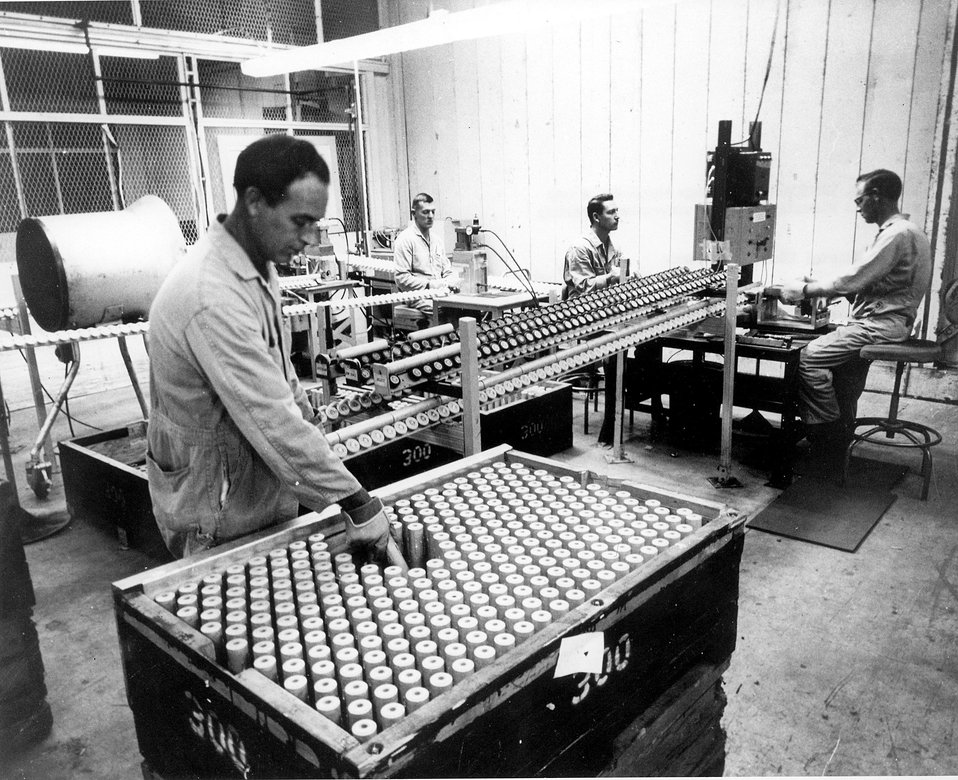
Some inspections are performed visually and with mechanical testing devices. c. 1964